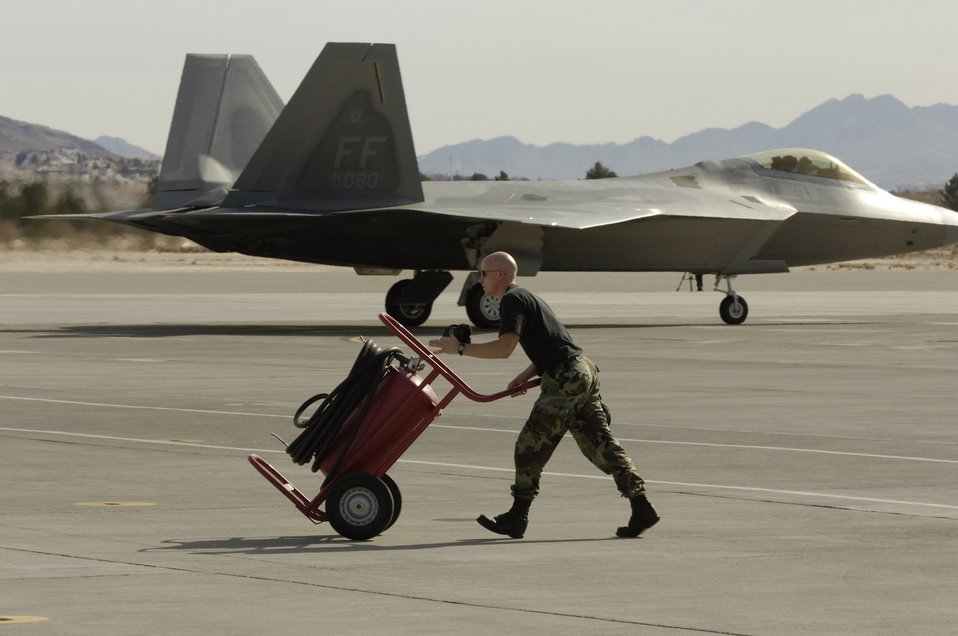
F-22s make mark at Red Flag

Tech. Sgt. Kasper Kolbe pushes a fire hose cart during Red Flag Feb. 6 at Nellis Air Force Base, Nev. Red Flag sharpens aircrews' warfighting skills in realistic combat situations. The aircraft are flying missions day and night at the nearby Nevada Test and Training Range where they simulate an air war. Sergeant Kolbe is an avionics specialist at the 94th Fighter Squadron at Langley AFB, Va.